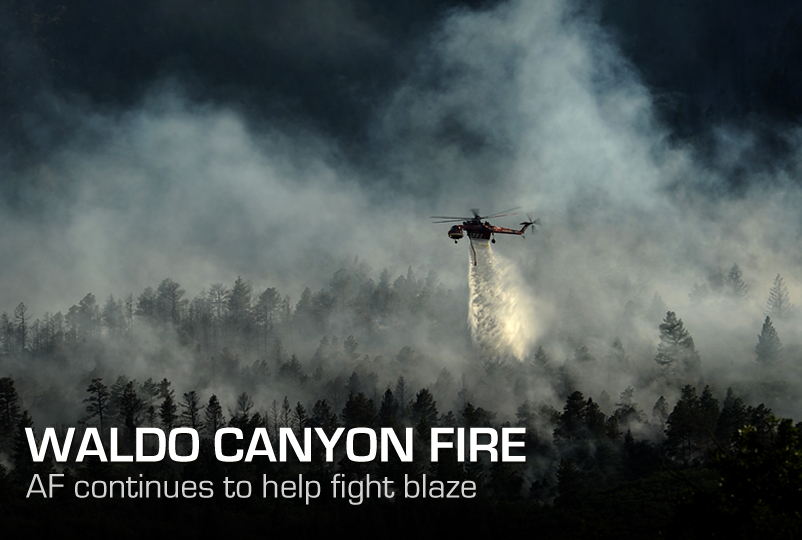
Waldo Canyon Fire

A helicopter drops water on the fire as firefighters continued to battle the blaze that burned into the evening hours in Waldo Canyon on the U.S. Air Force Academy June 27, 2012. The fires, which have burned more than 15,000 acres, began spreading to the southwestern corner of the Academy in the early morning, causing base officials to evacuate residents. Officials estimated that the fire had spread to about 10 acres of land belonging to the Academy. U.S. Air Force Photo by: Master Sgt. Jeremy Lock)